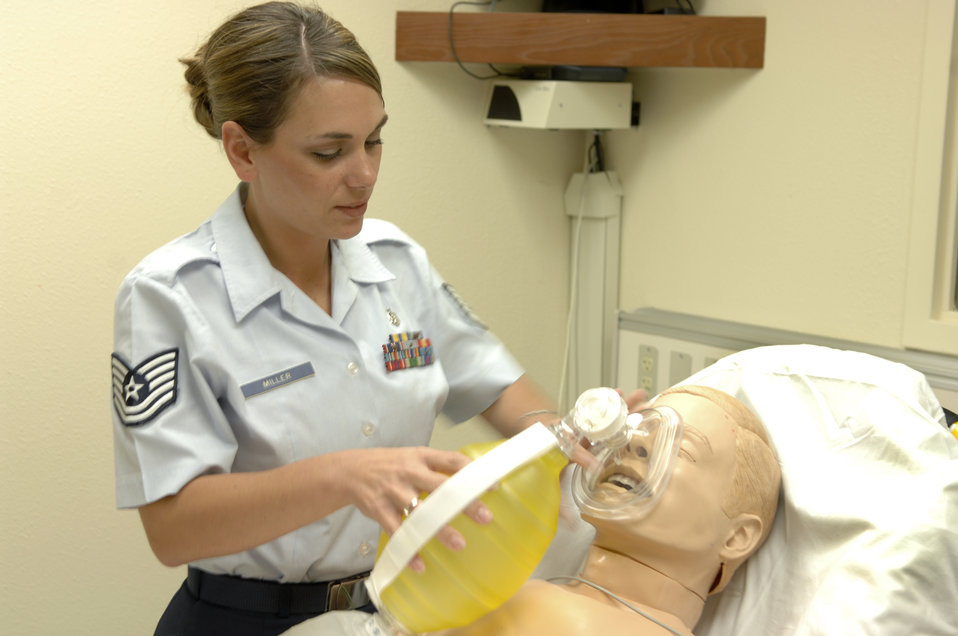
Self aid buddies who care

Tech. Sgt. Amy Miller demonstrates how to perform cardiopulmonary resuscitation on a CPR dummy at Elmendorf Air Force Base, Alaska. Sergeant Miller is an emergency medical technician coordinator and 3rd Wing self aid and buddy care advisor.